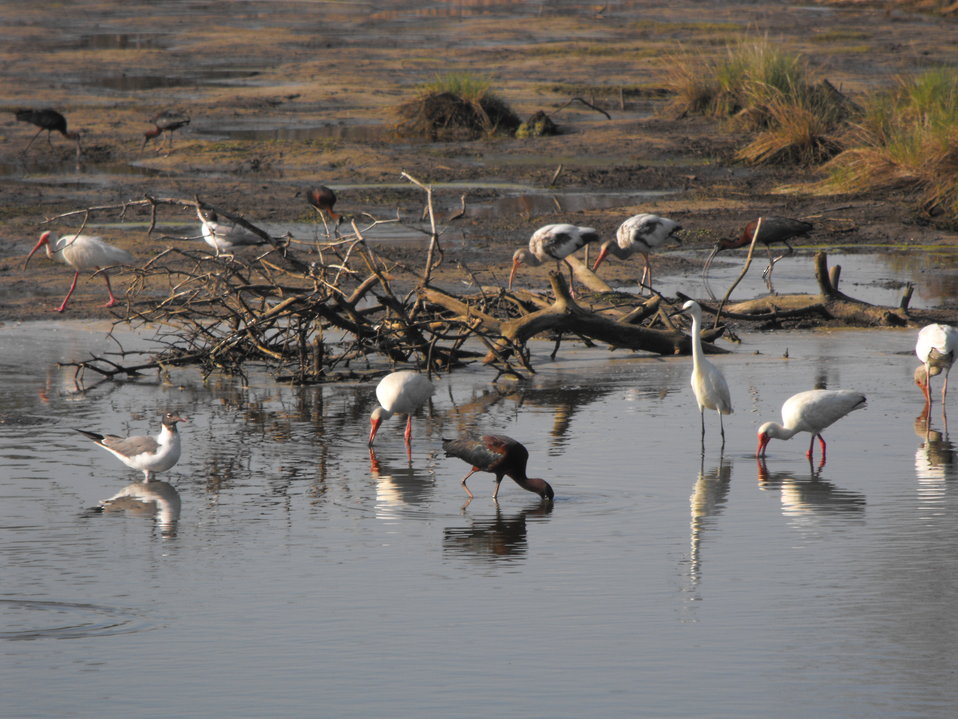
Birds feeding off Swan's Cove Trail

Glossy ibis, white ibis, laughing gulls, and a snowy egret feed in the pools off Swan's Cove Trail at Chincoteague National Wildlife Refuge.